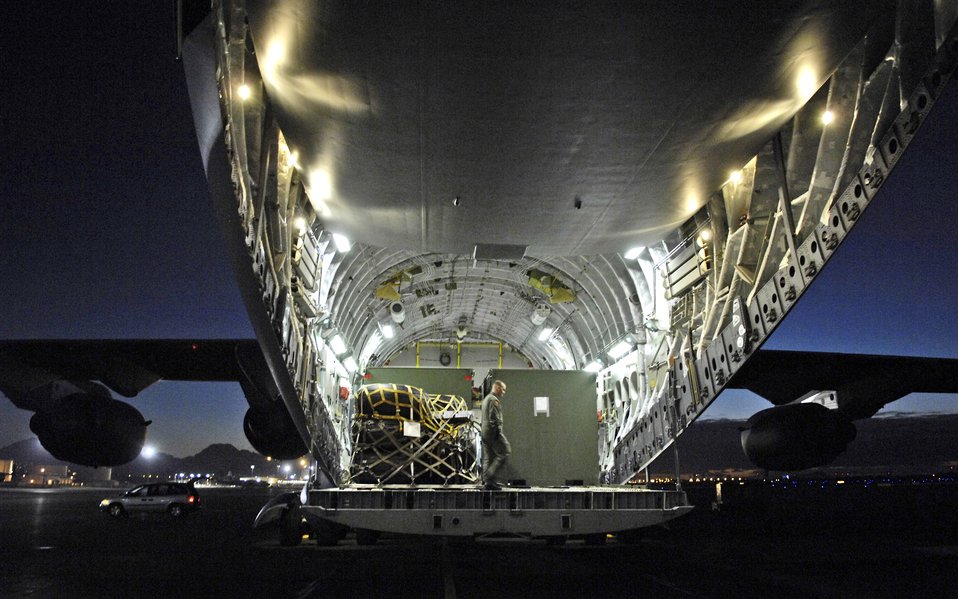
Airpower summary for 22 May 2007

Transports, like this C-17 Globemaster III, are vital to the resupply of troops in Southwest Asia. On May 22, approximately 159 airlift sorties were flown, 639 tons of cargo were delivered, and approximately 3,407 passengers were transported.